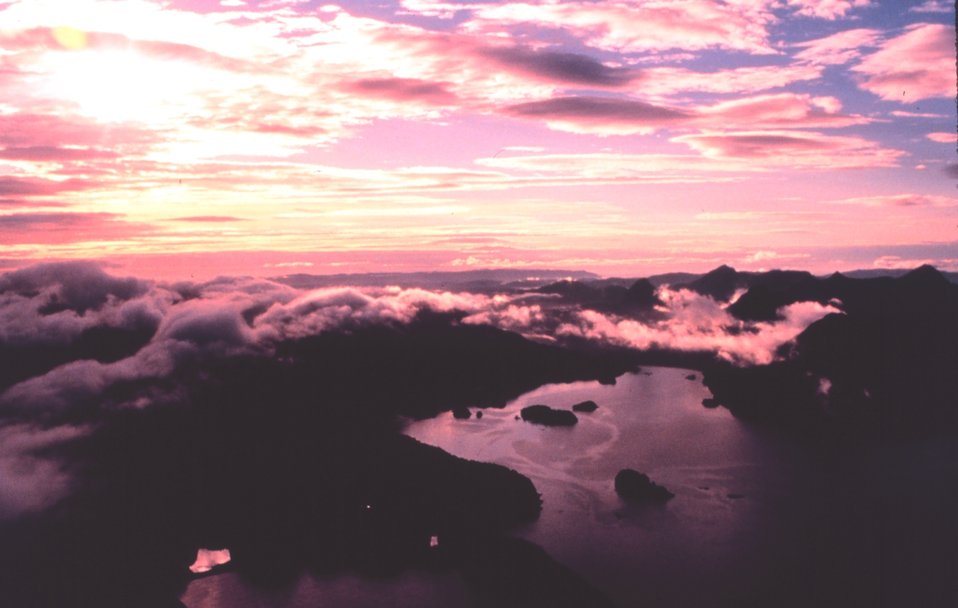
Sunset over Prince William Sound while sheen of oil is seen on surface of water